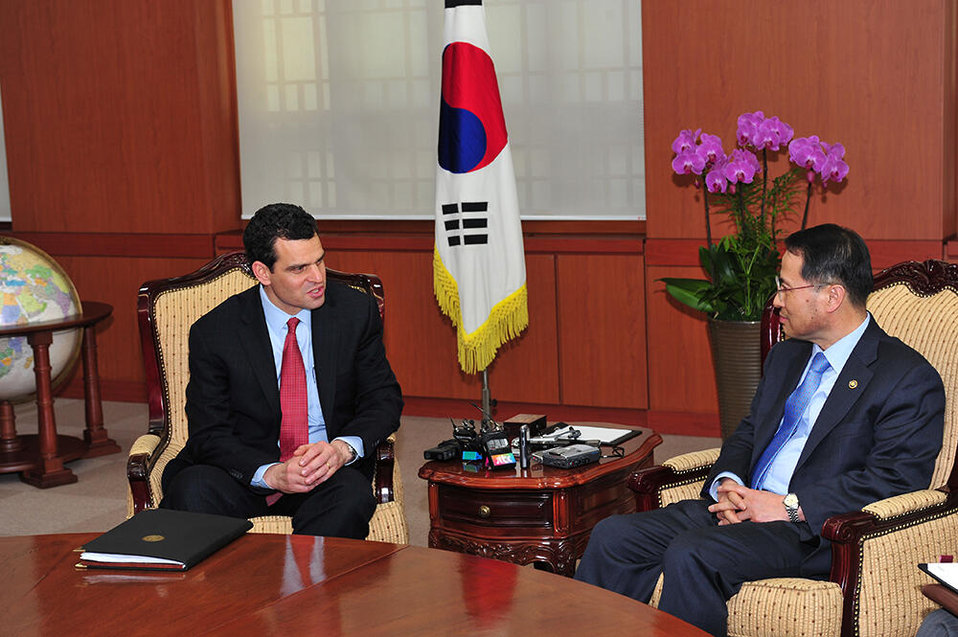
U.S. Treasury Under Secretary for Terrorism and Financial Intelligence, David Cohen, speaks with Kim Kyou-hyun, the First Vice Minister of Foreign Affairs at the Ministry of Foreign Affairs and Trade in South Korea on Wednesday, March 20, 2013

During Cohen’s four day trip to Tokyo, Seoul, and Beijing, discussions focused on implementing sanctions against the Democratic People’s Republic of Korea as well as Iran.